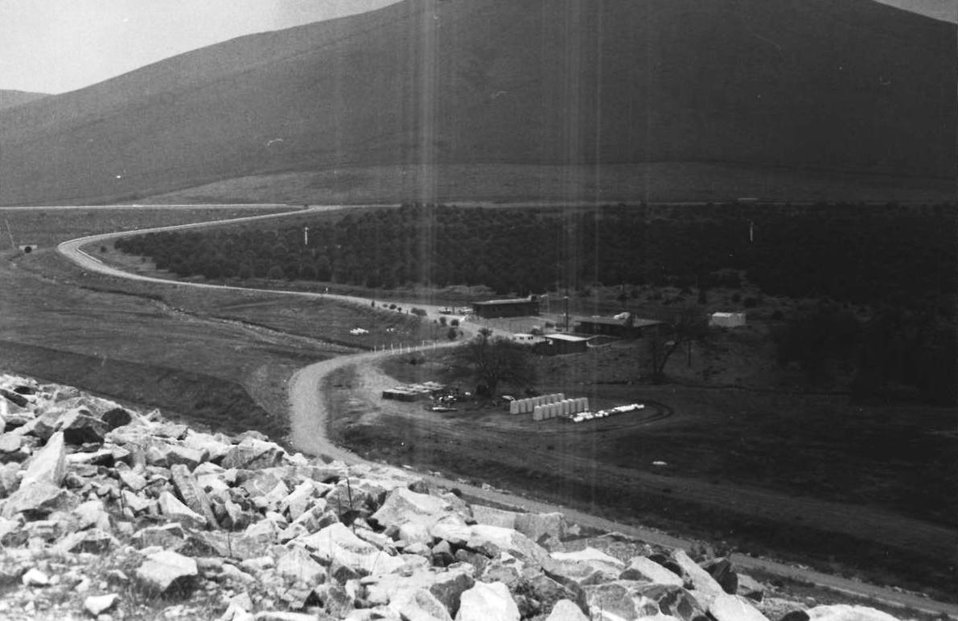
Success Dam

A historical view of the project office at Success Dam, located near Porterville, Calif., Dec. 7, 1966. The U.S. Army Corps of Engineers Sacramento District completed construction of Success Dam in 1961 and the reservoir provides flood risk management, water storage and recreational benefits to the local area.